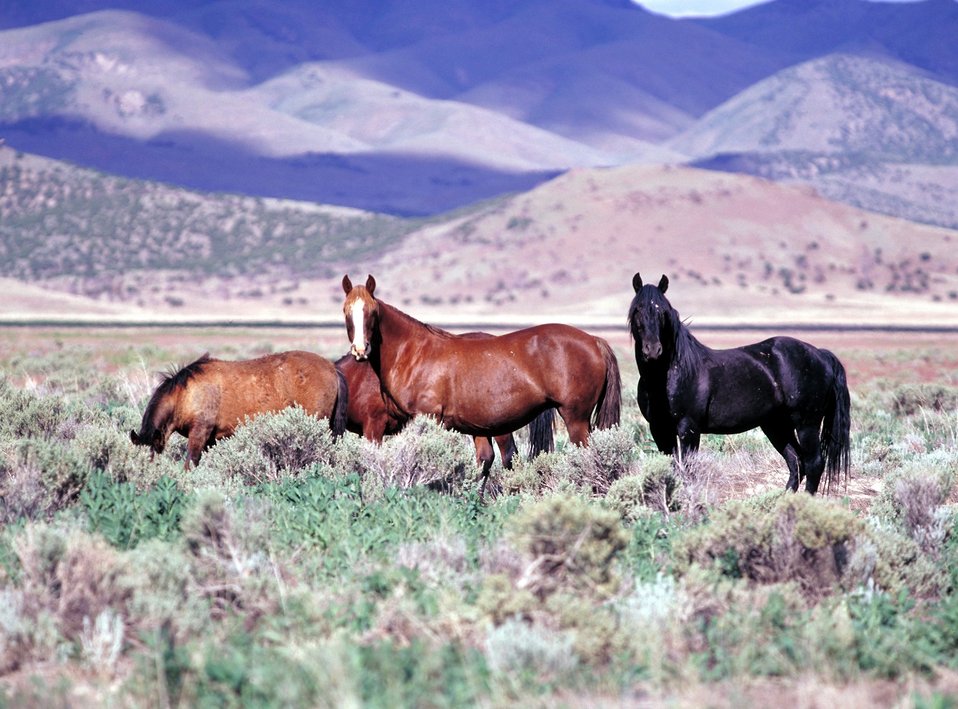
Onaqui Herd near Dugway, Utah.